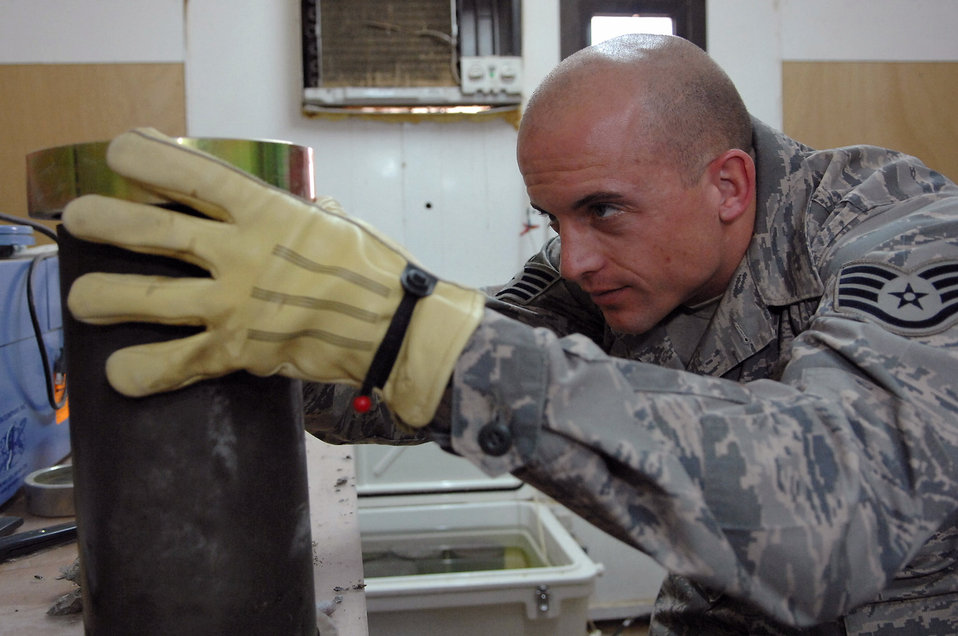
Under pressure

Staff Sgt. Jack Jenkins places brass ends on both sides of a concrete cylinder sample taken from the new Housing 6 area shoppette foundation Feb. 21 at Balad Air Base, Iraq. The brass ends are part of a strength test machine that is used to compress concrete to determine if it is suitable for use in building foundations or flightline areas. Sergeant Jenkins is a 332nd Civil Engineer Squadron engineering assistant deployed from Ellsworth Air Force Base, S.D.